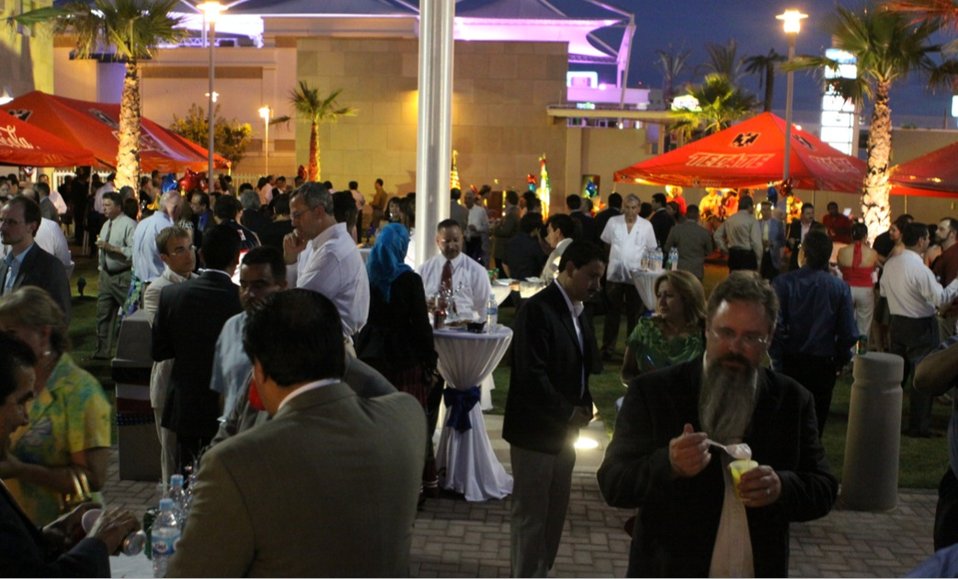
Consulate General in Ciudad Juarez

U.S. Consulate General in Ciudad Juarez celebrated U.S. Independence Day by holding a 'County Fair' on June 25, 2010, in Ciudad Juarez, Mexico.